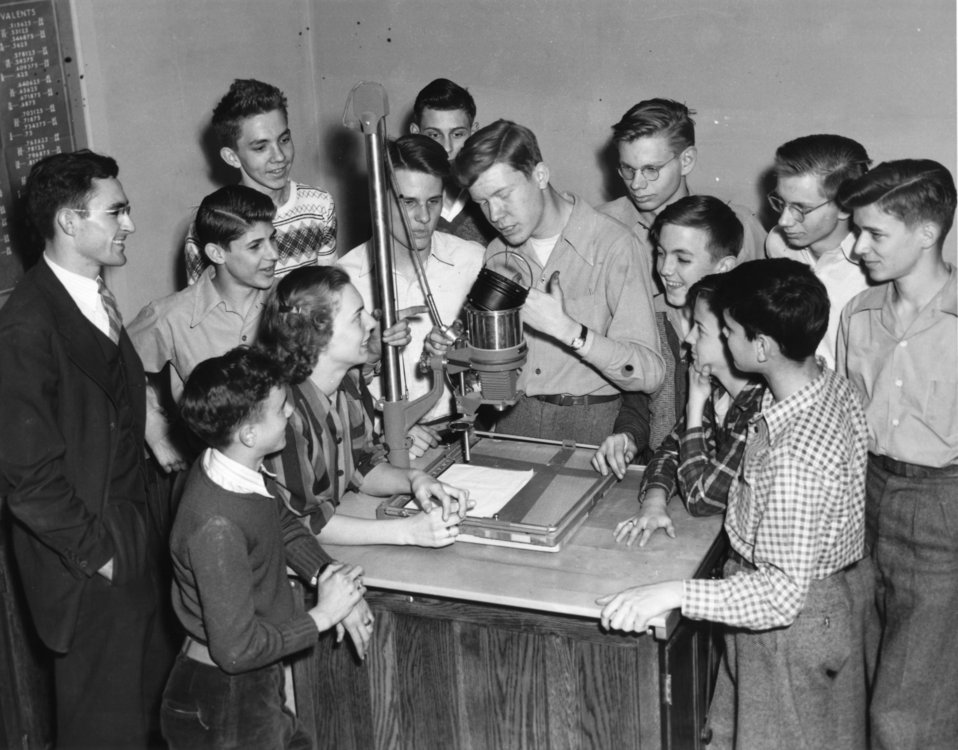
Schools at Oak Ridge